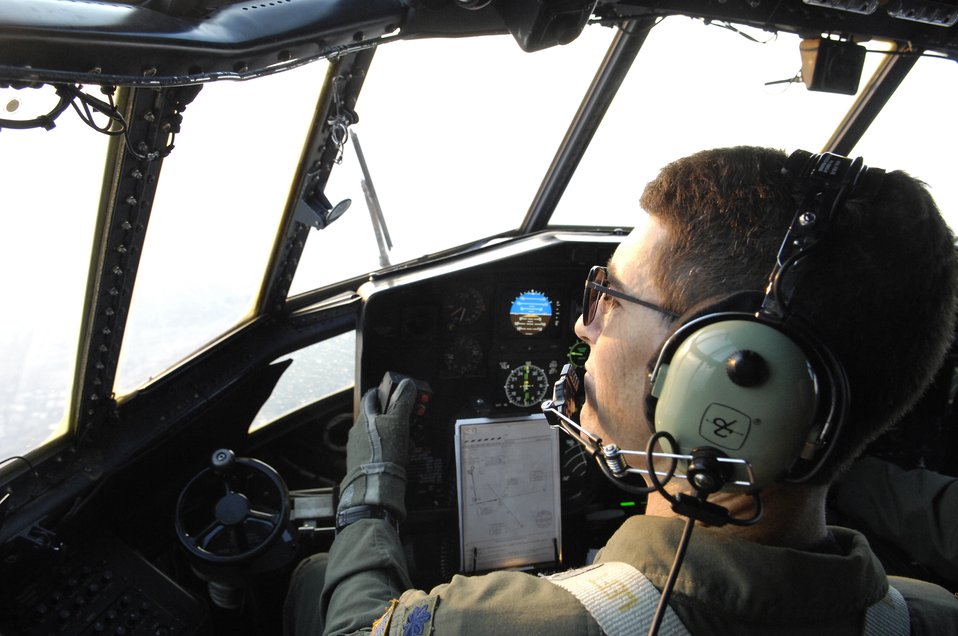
C-130s fight California wildfires

Lt. Col. Ted Treffeisen is part of the C-130 Hercules aircrew deploying 3,000 gallons of fire retardant over the Poomacha fire Oct. 24 in North San Diego County, Calif. The C-130 and crew are assigned to the 302nd Airlift Wing from Peterson Air Force Base, Colo. The aircraft launched from Channel Islands Air National Guard Station, Calif. Air Force Reserve Command officials sent two of its designated firefighting C-130H3 aircraft to help battle the raging wildfires in Southern California.